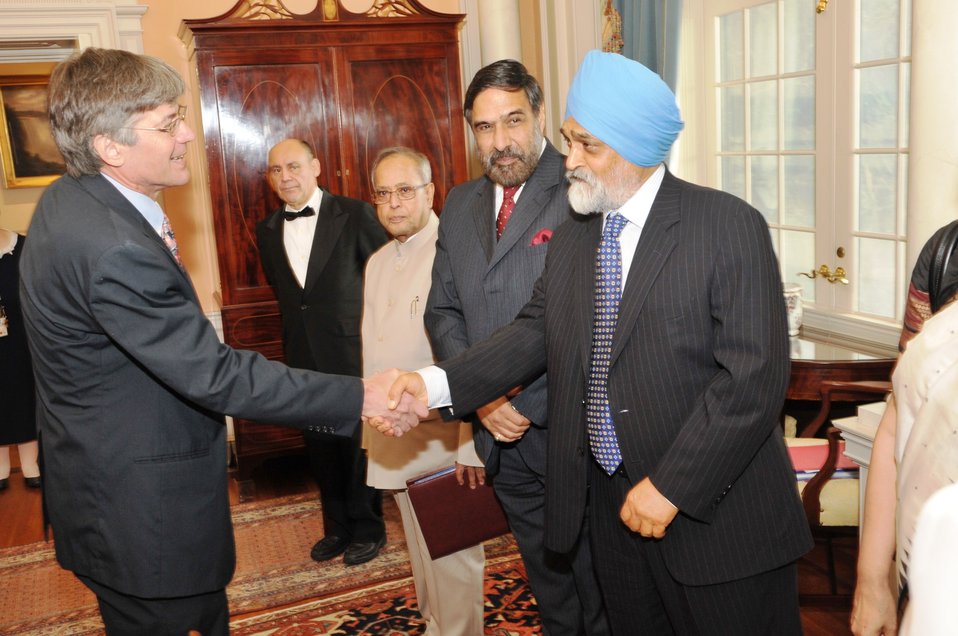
Deputy Secretary Steinberg Shakes Hands With Indian Deputy Chairman of the Planning Commission Montek Singh Ahluwalia

U.S. Deputy Secretary James Steinberg shakes hands with Indian Deputy Chairman of the Planning Commission Montek Singh Ahluwalia. Behind Deputy Chairman Singh are Indian Commerce Minister Anand Sharma, and Indian Finance Minister Pranab Mukherjee. This photo was taken at the U.S. Department of State on June 22, 2010.